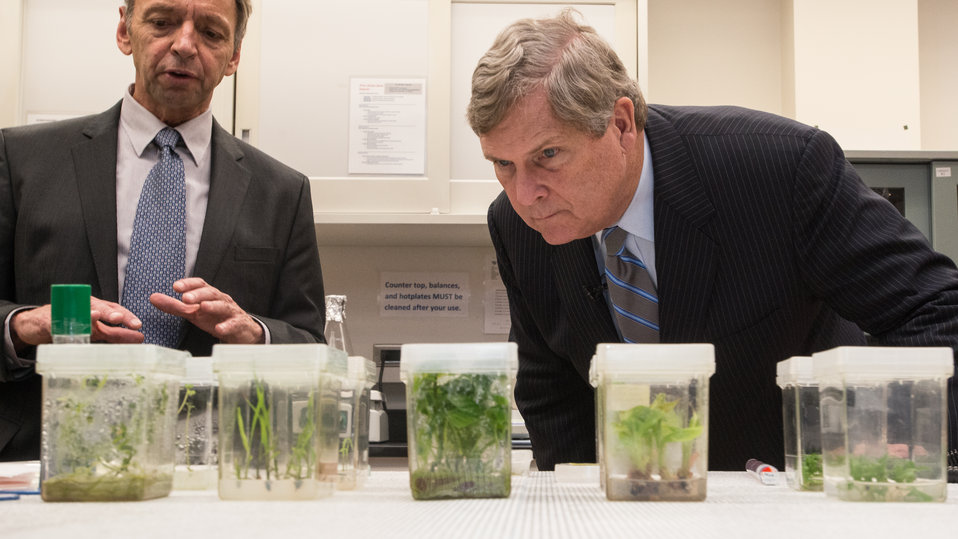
Agriculture Secretary Tom Vilsack looks at cube vessels with plant tissue cultures as U.S. Department of Agriculture (USDA) Agriculture Research Service (ARS) Geneticist Research Leader Dr. David Dierig provides details about the process to the Secretary at USDA‘s ARS National Center for Genetic Resources Preservation (NCGRP) in Ft. Collins, CO on Wednesday, Nov. 6, 2013. NCGRP is the largest agricultural gene bank facility in the U.S. The NCGRP staff conducts groundbreaking research to develop more efficient and effective means for preserving plant and animal germplasm, and for better understanding the genetic structure of these invaluable materials. The research findings, preservation techniques, and specialized technology developed by the NCGRP have been adopted by gene banks around the world: many international scientists travel to the NCGRP for research and training.